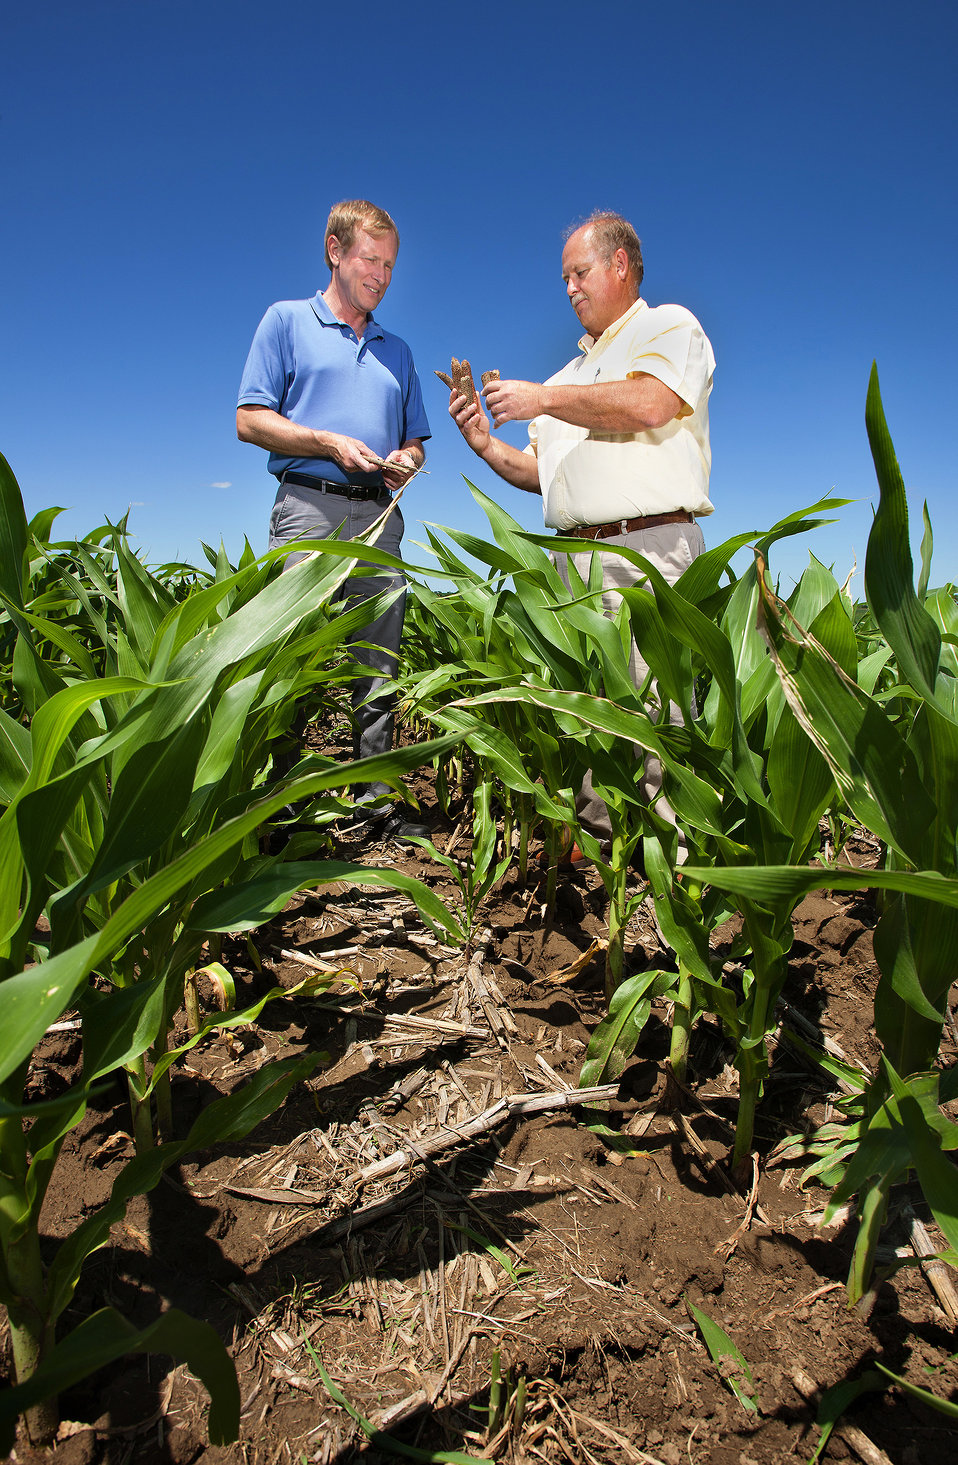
U.S. Department of Agriculture (USDA) Agriculture Research Service (ARS) soil scientists Brian Wienhold and Gary Varvel compare corncob residue in various stages of decomposition in no-till corn in Lincoln, NE Nov. 3, 2003.